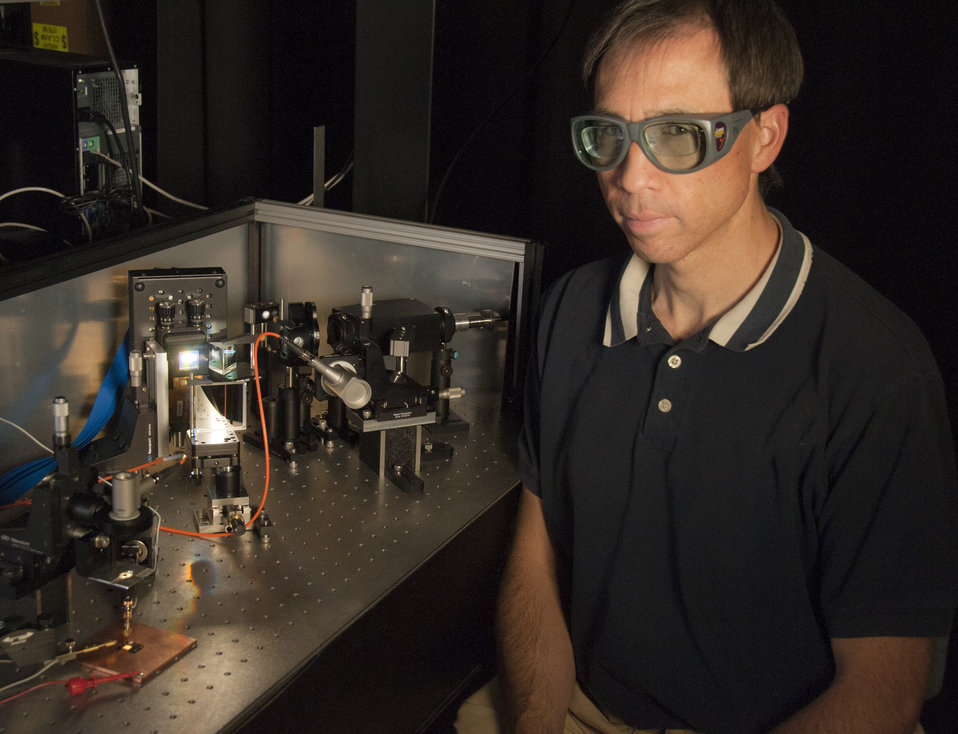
NIST engineer Tasshi Dennis with NIST's solar simulator based on a white light laser. The instrument simulates sunlight to help measure the properties of solar cell materials. The instrument's beam is illuminating a gallium arsenide solar cell (yellow diamond) in the lower left corner of the photo.